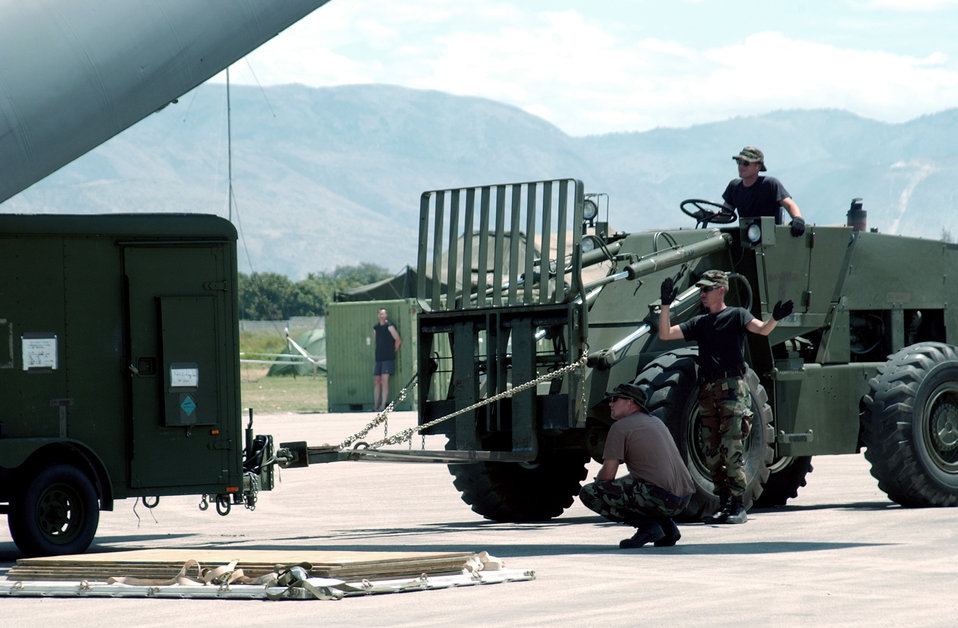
Operation Secure Tomorrow

PORT-AU-PRINCE, Haiti -- Master Sgt. Mike Powell guides forklift driver Staff Sgt. Jacob Tittle while Staff Sgt. Alex Henson serves as spotter. The Airmen are assigned to the 84th Aerial Port Squadron here supporting Operation Secure Tomorrow.